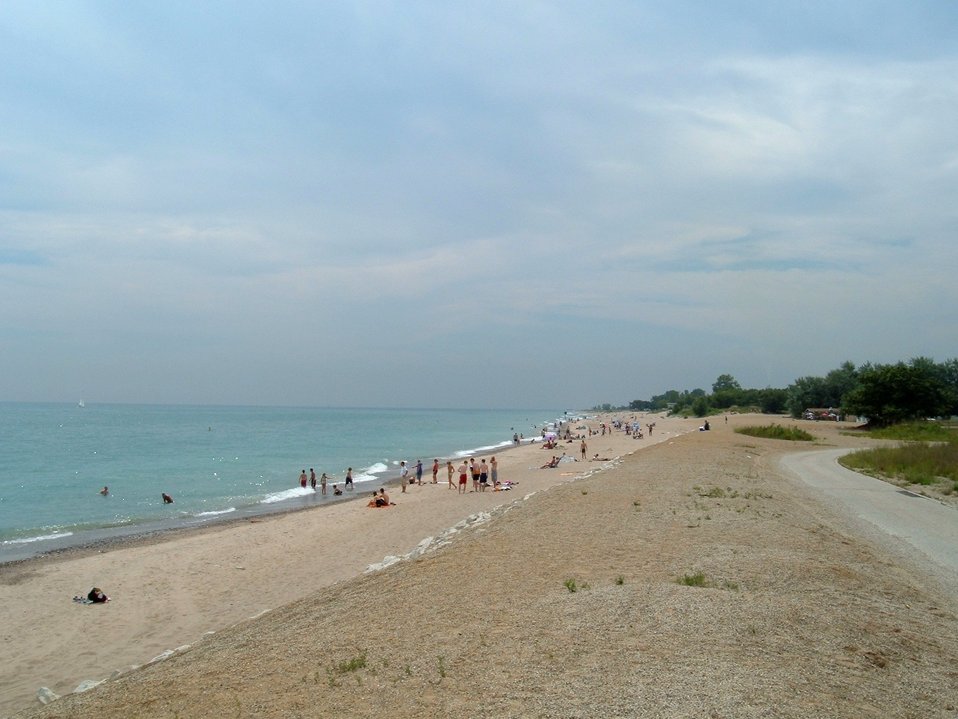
Main beach at southern unit of Illinois Beach State Park. Photo taken in 2006 by Dave Piasecki